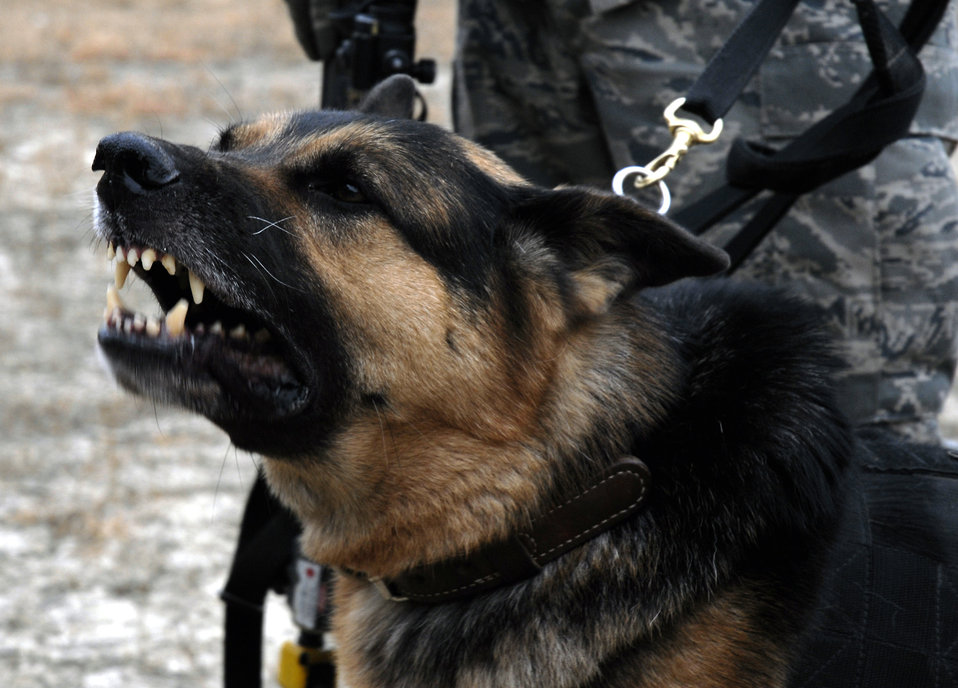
I mean business

Eddy, a military working dog from McChord Air Force Base, Wash., reacts to an urban terrain training scenario at the Air Force Phoenix Warrior Training Course Feb. 28 at Naval Air Engineering Station Lakehurst, N.J.